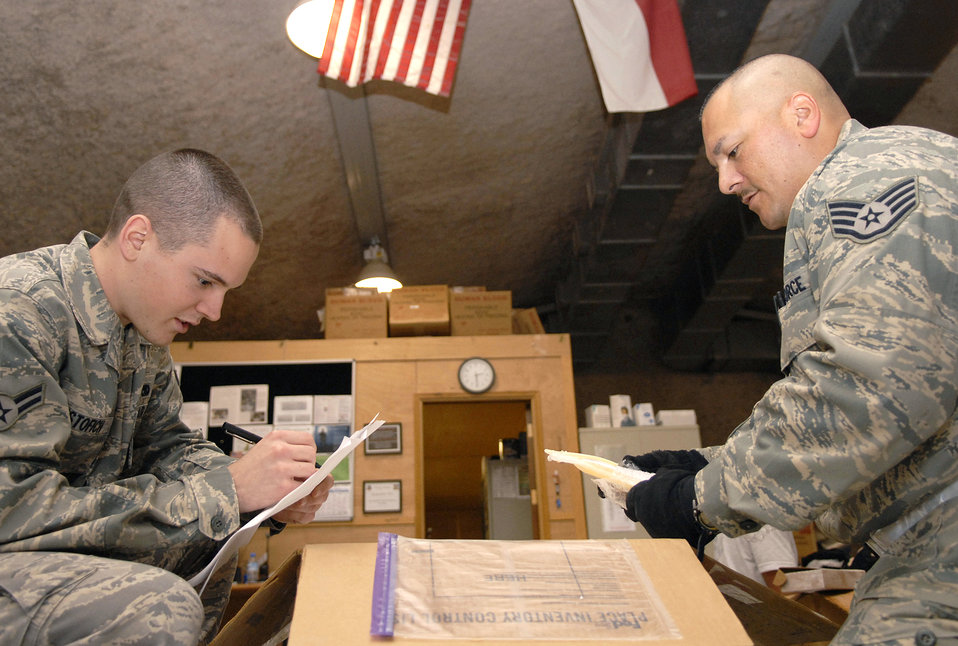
Blood Transshipment Center

Airman 1st Class Benjamin Cristofich (left) and Staff Sgt. James Palapas, both volunteers from the 71st Expeditionary Air Control Squadron at this air base in Southwest Asia, assist the 379th Expeditionary Medical Group Blood Transshipment Center staff in inventorying frozen plasma May 9 to ensure it is ready to be distributed throughout the U.S. Central Command area of operation.